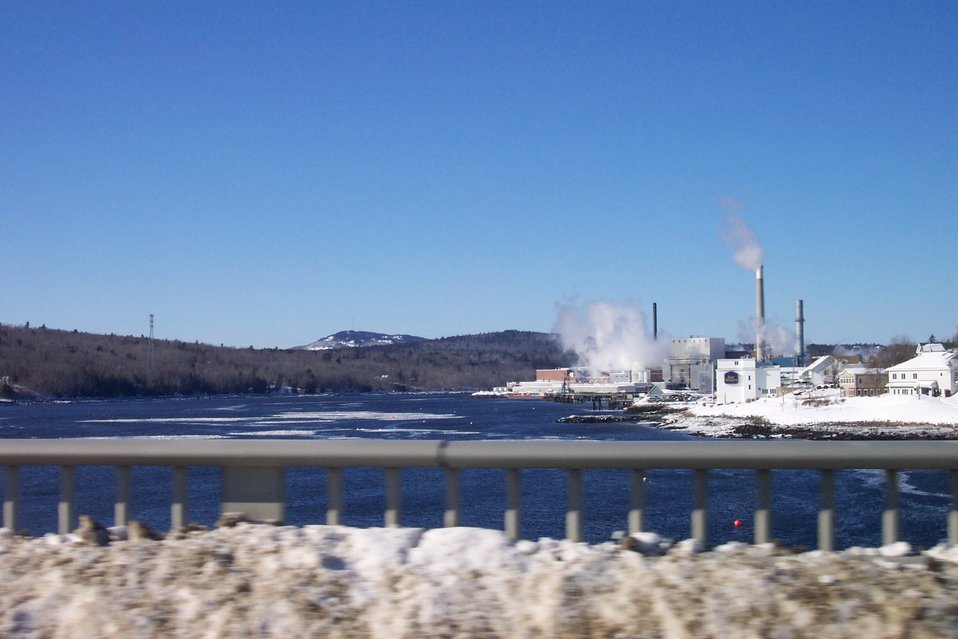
The paper mill at Bucksport from the Bucksport-Verona Bridge.